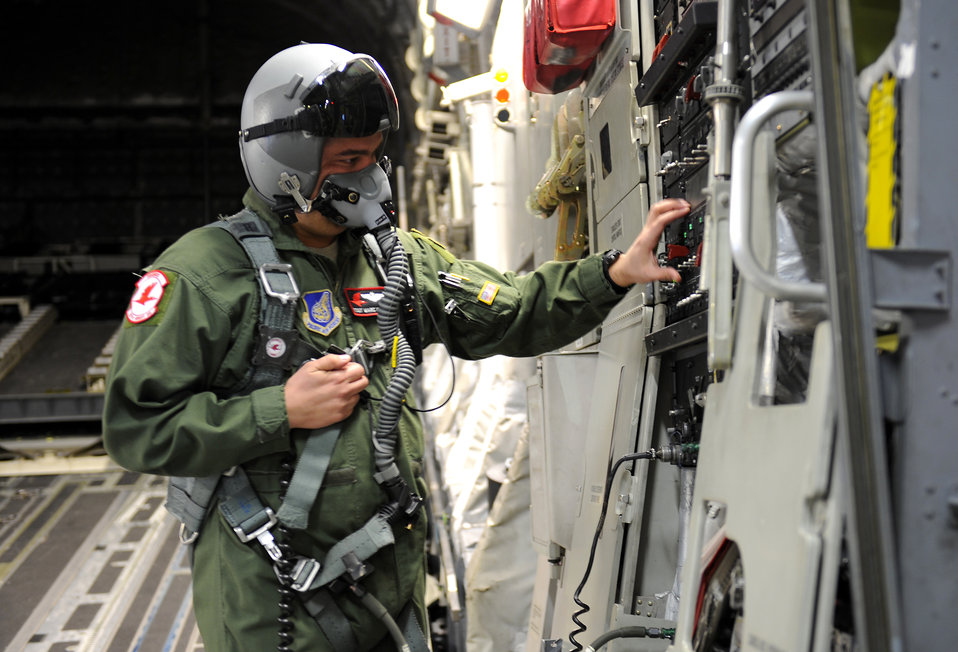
Joint training at 12,500 feet

Tech. Sgt. Marc Nelson prepares to open the rear doors of a C-17 Globemaster III before a group of Navy SEALs jump from 12,500 feet April 15, 2010, over Fort Picket Maneuver Training Center, Va. The jump was part of joint training exercise with 517th Airlift Squadron members from Elmendorf Air Force Base, Alaska.